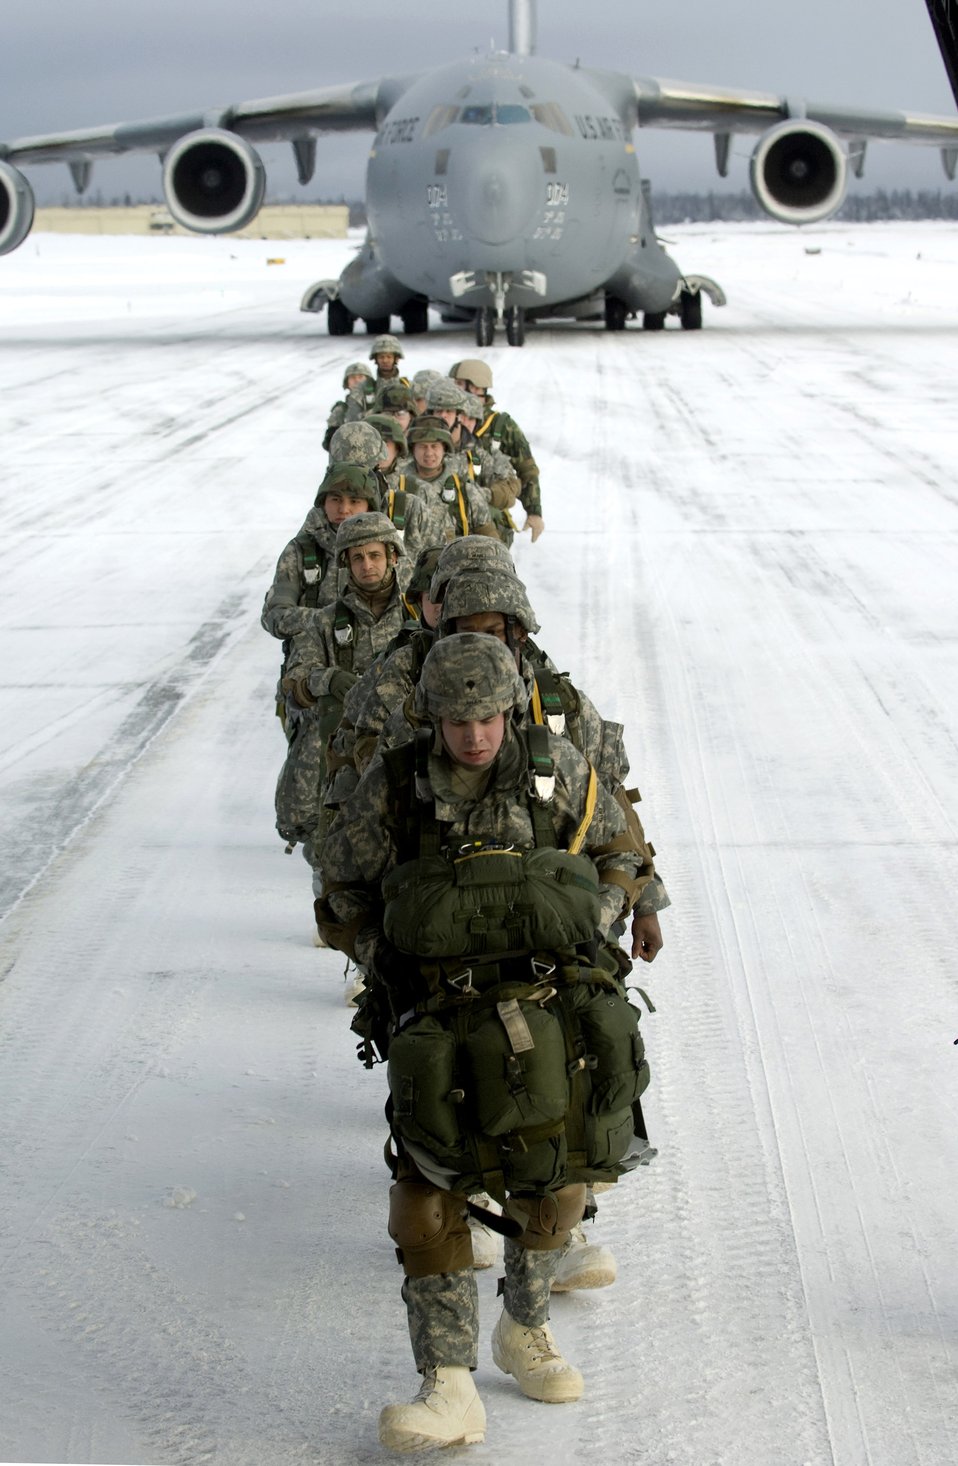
It's a cold day to jump

Soldiers from the 4th Quartermasters Detachment at Fort Richardson, Alaska, board a C-17 Globemaster III from the 517th Airlift Squadron at Elmendorf Air Force Base, Alaska, before a training mission. The training mission included parachuting into a drop zone and conducting equipment air drops.